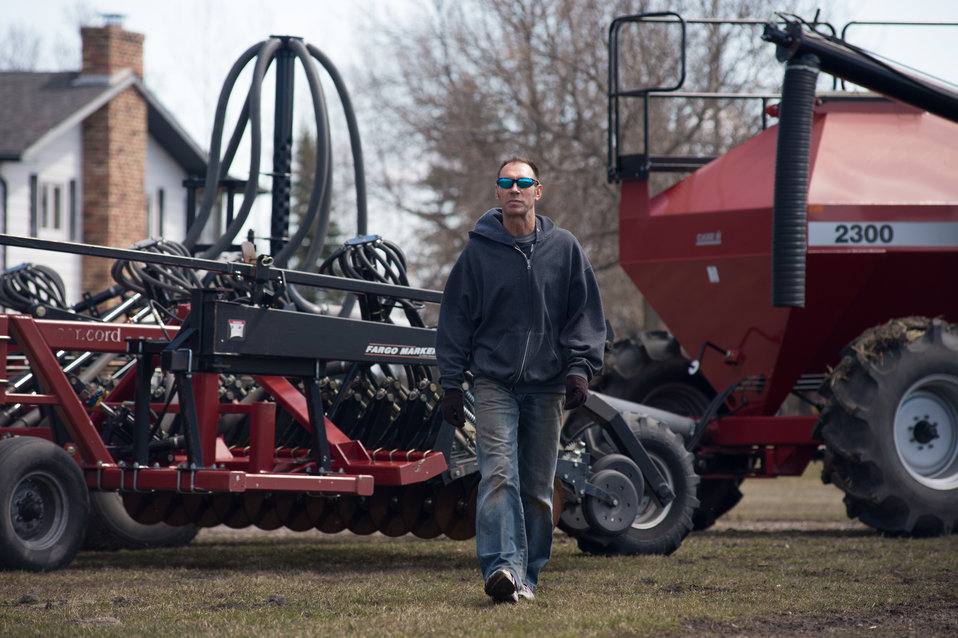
Jeff Hoff checks the farm equipment at his farmstead in Perley, MN, on Tuesday, April 30, 2013. With the assistance of the U.S. Department of Agriculture (USDA), he was able to build up and modify an earthen dike that is currently holding back flood waters around his home, structures and farm equipment. To learn about the USDA Red River Basin Initiative, see www.mn.nrcs.usda.gov/news/features13/RRBI.html.